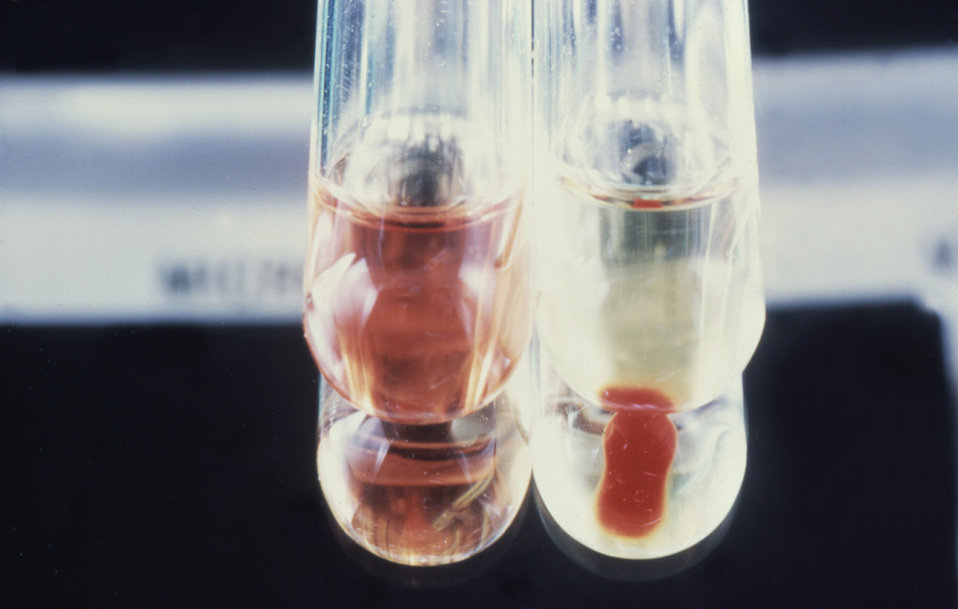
These are hemolysis test tubes used for the purpose of isolation and identification of Vibrio cholerae.